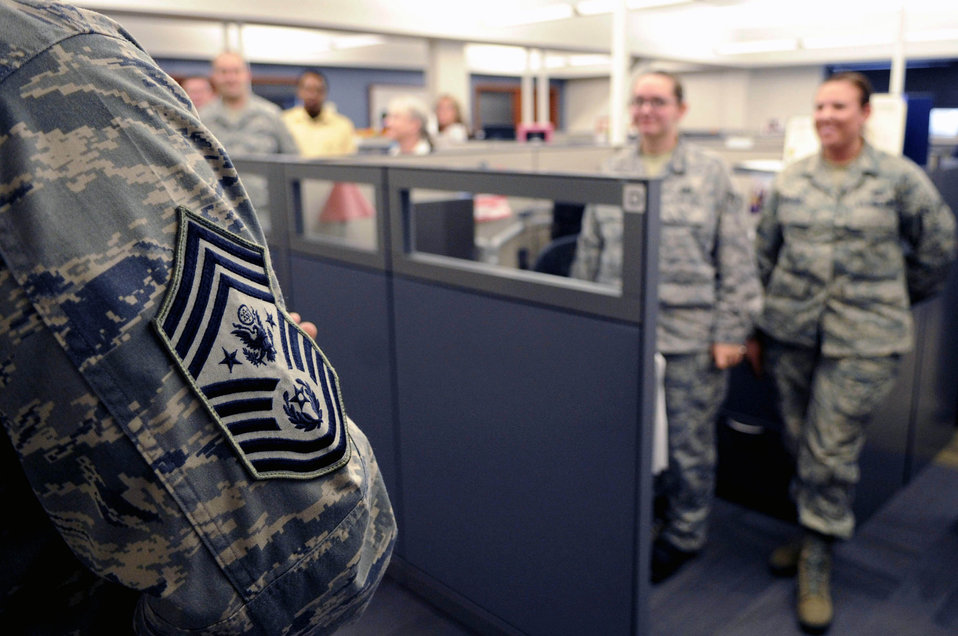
CMSAF visits Ellsworth

Chief Master Sgt. of the Air Force James A. Roy talks with Airmen and civilians at the financial services center, Oct. 21, 2009, during a two-day visit to Ellsworth Air Force Base, S.D. Chief Roy discussed the importance of their finance and travel work to the Air Force during his visit.